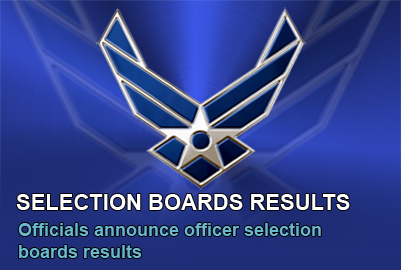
Selection boards results